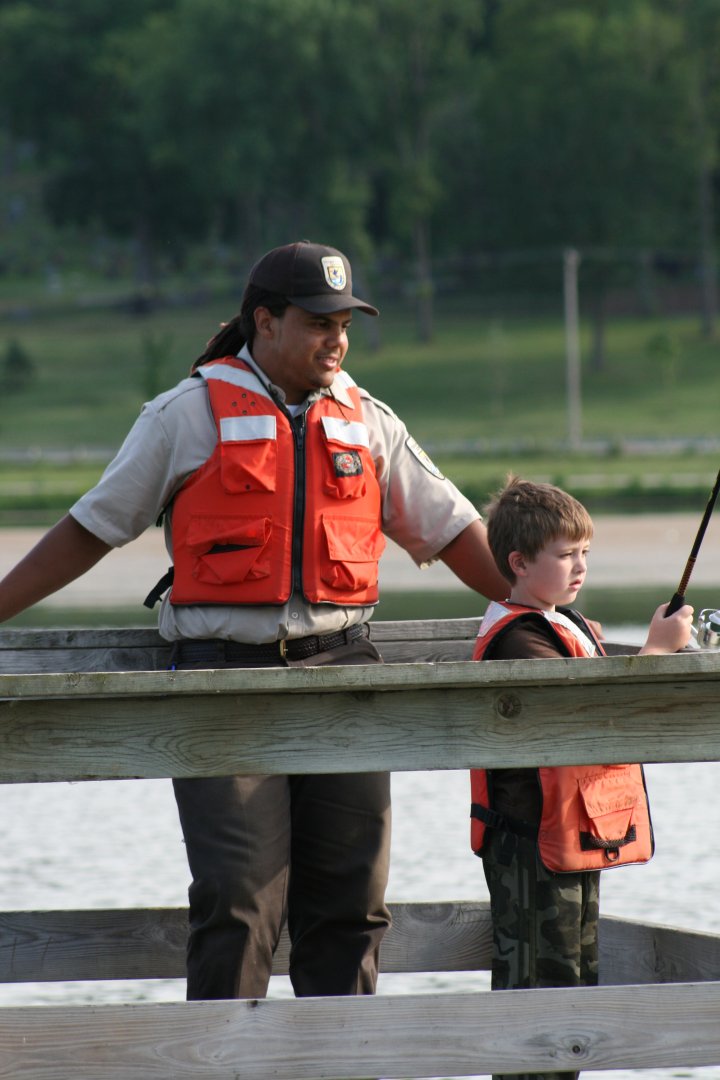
PR Johnson assists a future volunteer

Park Ranger Lewis Johnson assists a young angler during a fishing event.